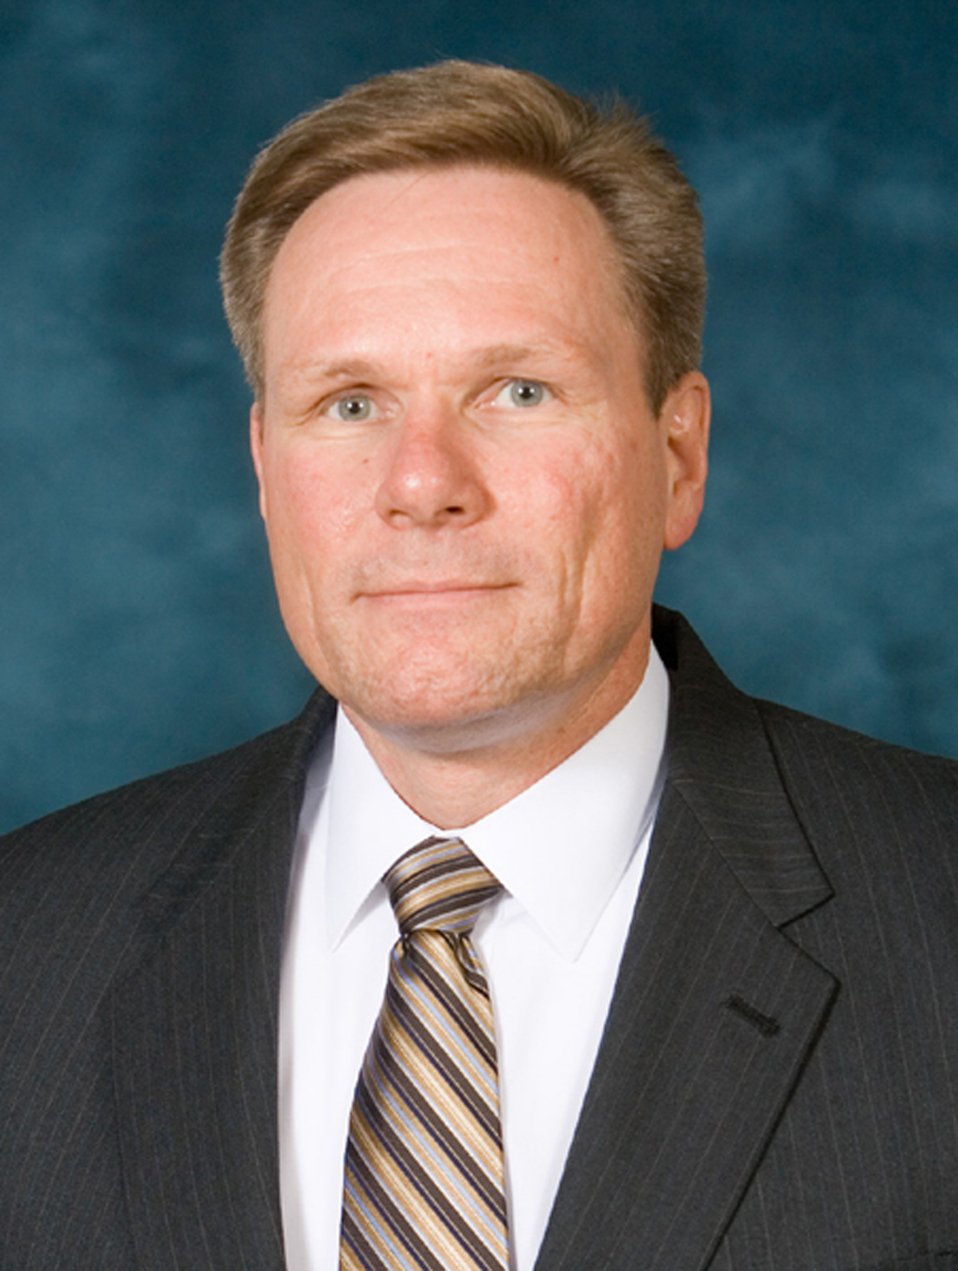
New Air Force chief scientist has AFMC ties

Dr. J.A. Dahm will begin serving as the Air Force Chief Scientist in October. Dr. Dahm worked at Arnold Engineering Development Center, Arnold Air Force Base, Tenn., in 1979-1981. He was a research engineer and graduate student at the University of Tennessee Space Institute.